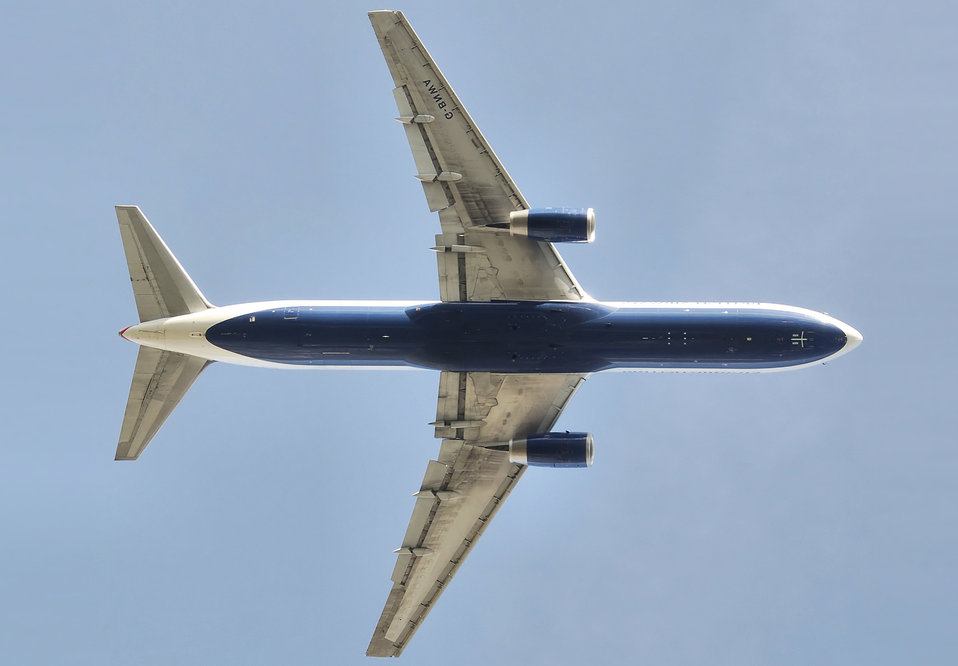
British Airways Boeing 767-300 (G-BNWA) takes off (over my head) from London Heathrow Airport, England. The undercarriages have retracted. Français : Un avion Boeing 767-300 de la British Airways décolle de l'aéroport d'Heathrow, en Angleterre. Son train d'atterrissage est rentré. Türkçe: British Airways'e ait bir Boeing 767-300'ün, kalkışın ardından iniş takımları kapanmış ve flapları kısmen yerini almış hâldeki alttan görünümü